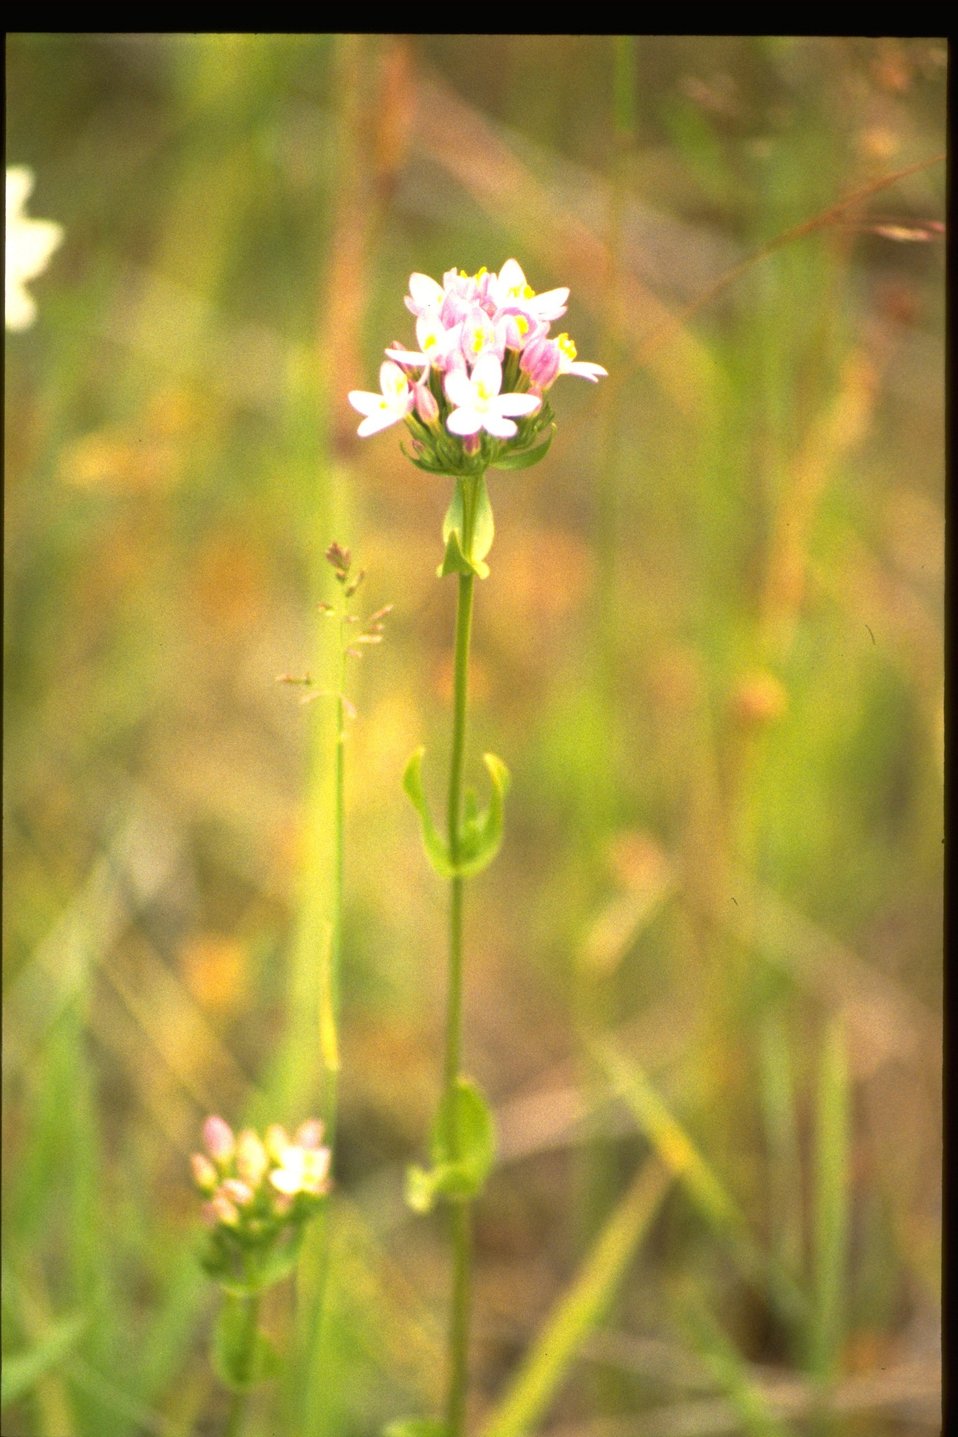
Medium shot of unidentified wildflower.